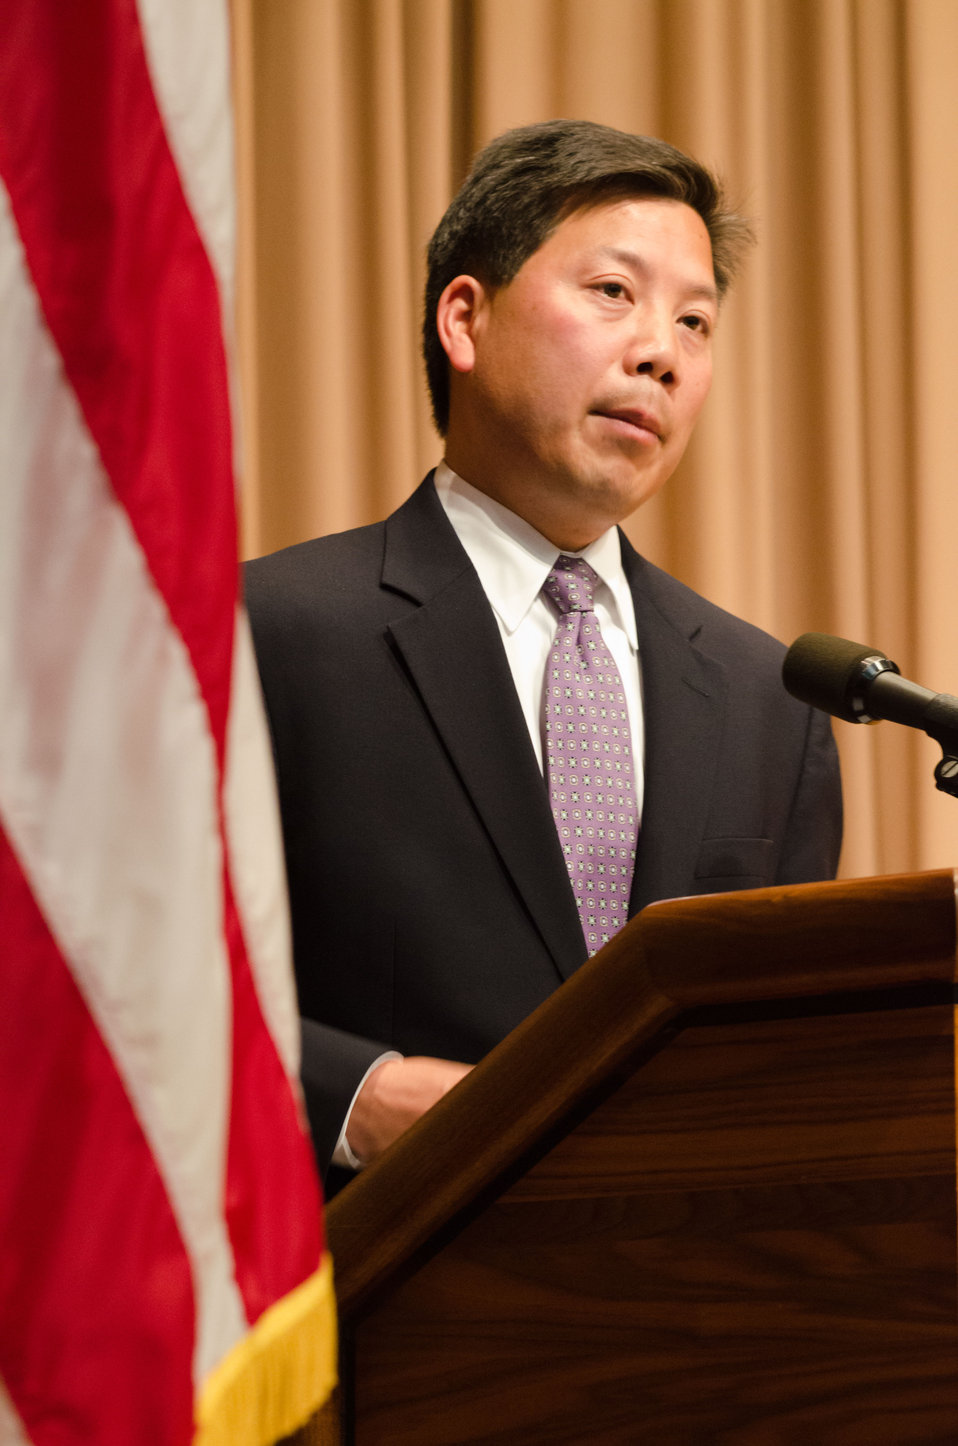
Assistant to the President and Cabinet Secretary The White House Chris Lu was the guest speaker at the 2012 Asian Pacific American Heritage Observance “Striving for Excellence in Leadership, Diversity and Inclusion” at the U.S. Department of Agriculture in Washington, D.C. on Thursday, May 24, 2012. Lu is President Obama’s primary liaison to the Cabinet departments and agencies, helping to coordinate policy and communications strategy and serves as co-chair of the White House Initiative on Asian Americans and Pacific Islanders.